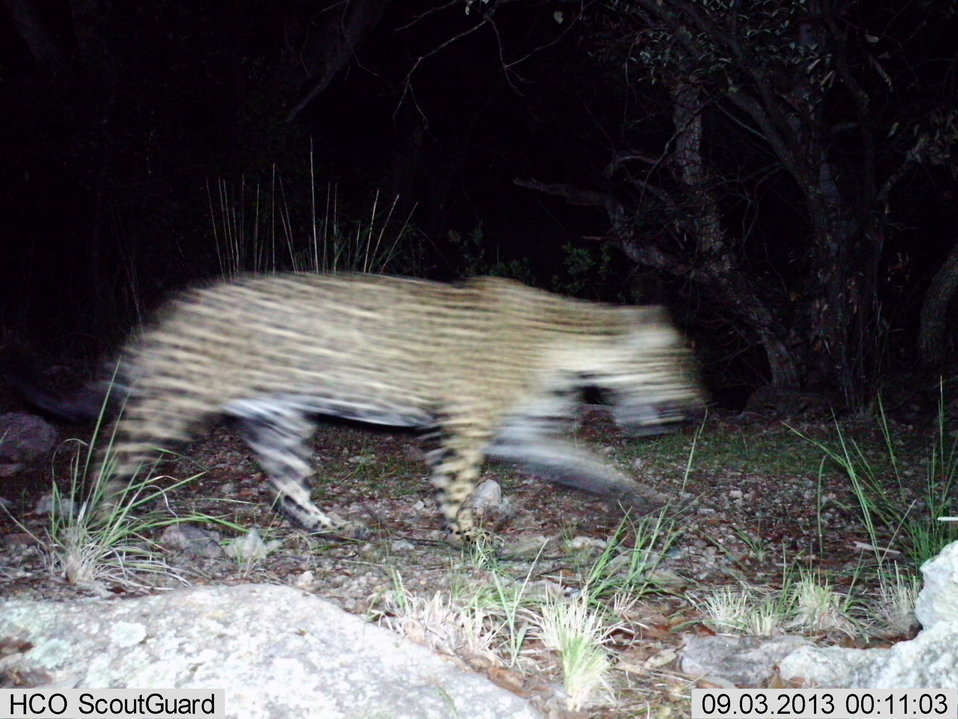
Male jaguar photographed by automatic wildlife cameras in the Santa Rita Mountains on September 3, 2013, as part of a U.S. Fish and Wildlife Service/Department of Homeland Security-funded jaguar survey conducted by University of Arizona. This photo is blurry. The jaguar has been photographed previously at this location.